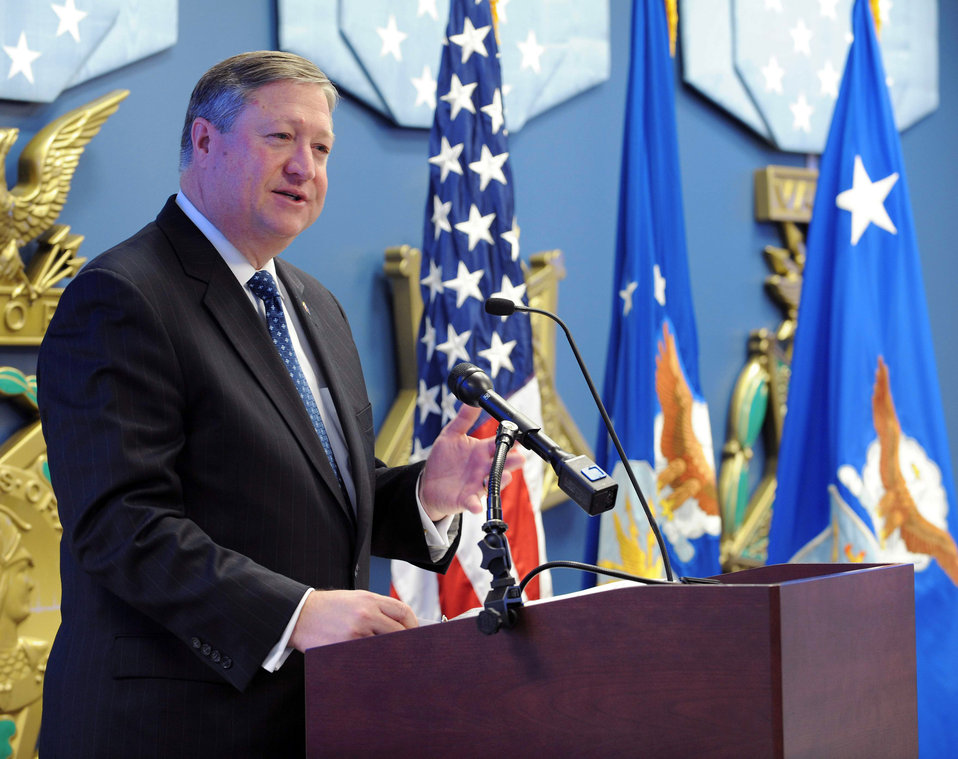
Secretary Donley announces location of newest Fisher House

Secretary of the Air Force Michael Donley announces the acceptance of a Fisher House to be built on Dover Air Force Base, Del., during a ceremony to present the Zachary and Elizabeth Fisher Distinguished Civilian Humanitarian Award to Nancy Berglass at the Pentagon's Hall of Heroes Jan. 27, 2010, in Washington, D.C. The multidepartmental award was established in 1996 and is presented to those exemplifying personal qualities of patriotism, generosity, and selfless dedication to improving the quality of life of members of the Armed Forces of the United States. Ms. Berglass serves as lead consultant with the California Community Foundation's Iraq/Afghanistan Deployment Impact Fund. She is credited with distributing more than $245 million to 46 non-profit organizations that provide support services and programs to military members returning from Iraq and Afghanistan and their families. The Fisher House Foundation donates comfort homes built on the grounds of major military and Veterans Affairs medical centers. The homes enable family members to be close to a loved one during the hospitalization for an unexpected illness, disease or injury. The program has provided nearly 3 million days of lodging to family members since it originated in 1990.